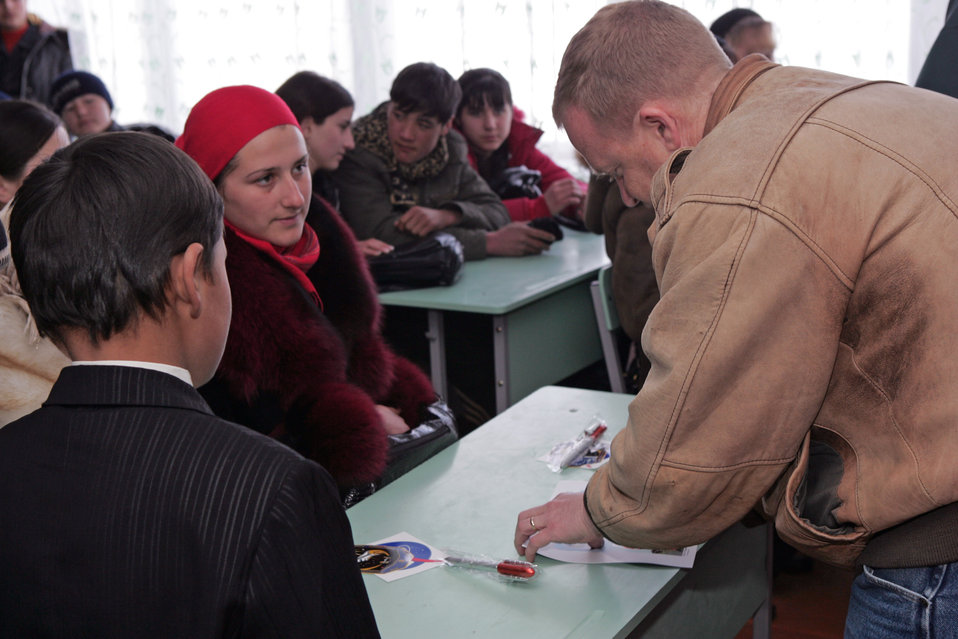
Shuttle Endeavour crew visits Kyrgyzstan village school

Col. Eric Boe autographs a picture for a student at the Jany-Pakhta village school in Kyrgyzstan Jan. 29 near Manas Air Base, Kyrgyzstan . Six crewmembers of the Space Shuttle Endeavour mission, which launched from Kennedy Space Center in Florida Nov. 14 and returned Nov. 30, 2008, visited the school during a tour of deployed locations supporting Operation Enduring Freedom in Afghanistan. Colonel Boe was the pilot for the STS-126 mission.